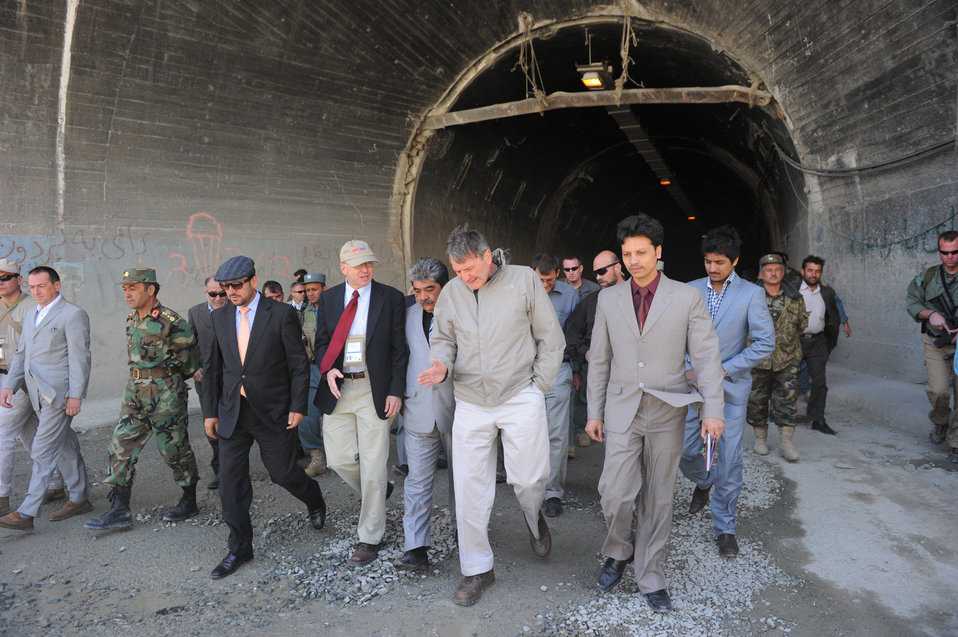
U.S. Ambassador Karl W. Eikenberry attends a ceremony to mark the beginning of renovations at the Salang Tunnel on the border of Parwan and Baghlan Provinces, Afghanistan, on Wednesday, June 15, 2011. (S.K.Vemmer/Department of State)